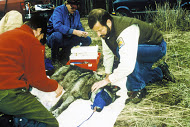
Gray wolf

Scientific name: Canis lupus
Status: Endangered Non-Essential Experimental Population and delisted
Photo credit: USFWS
Gray wolf health examination